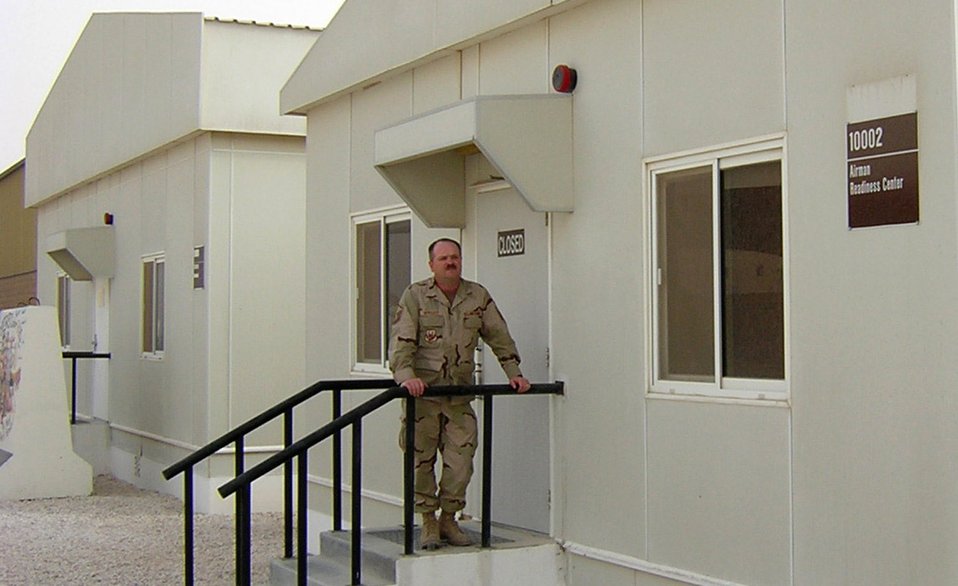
First deployed Airman Readiness Center opens

Master Sgt. Steven Wright stands outside the Air Force's first deployed Airman Readiness Center in Southwest Asia. The sergeant recently deployed from Mountain Home Air Force Base, Idaho, to establish the readiness center to help servicemembers stationed in the region.